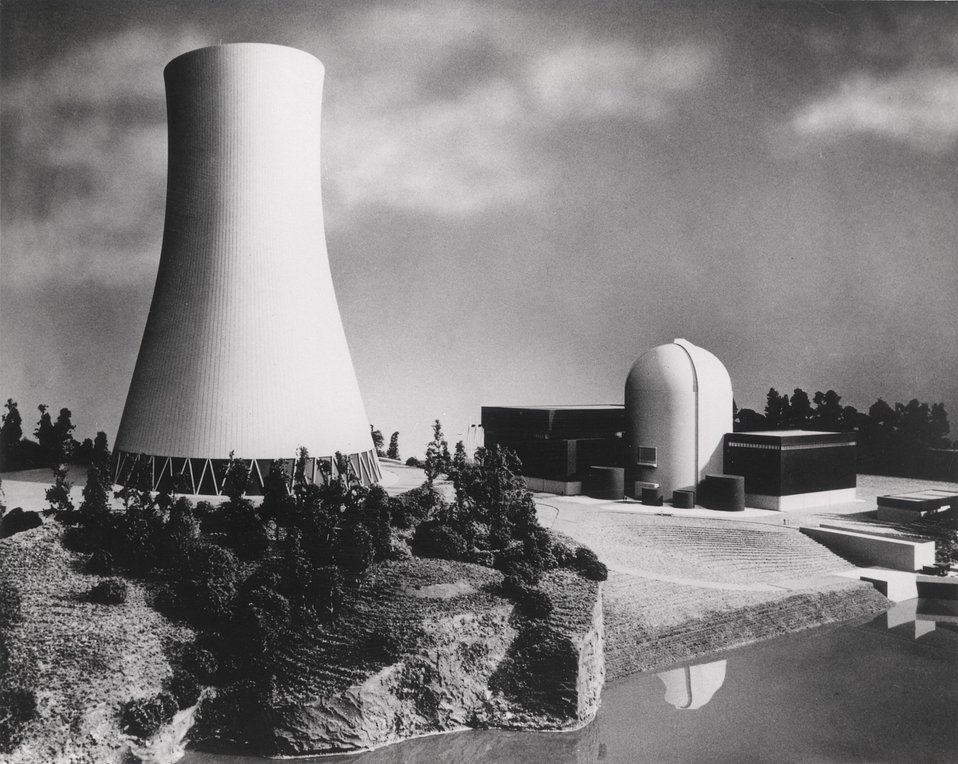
This photo is of a Bechtel Corporation model of the Portland General Electric Company's Trojan Nuclear Power Plant which will be built near Rainier, Oregon. Circa 1971.